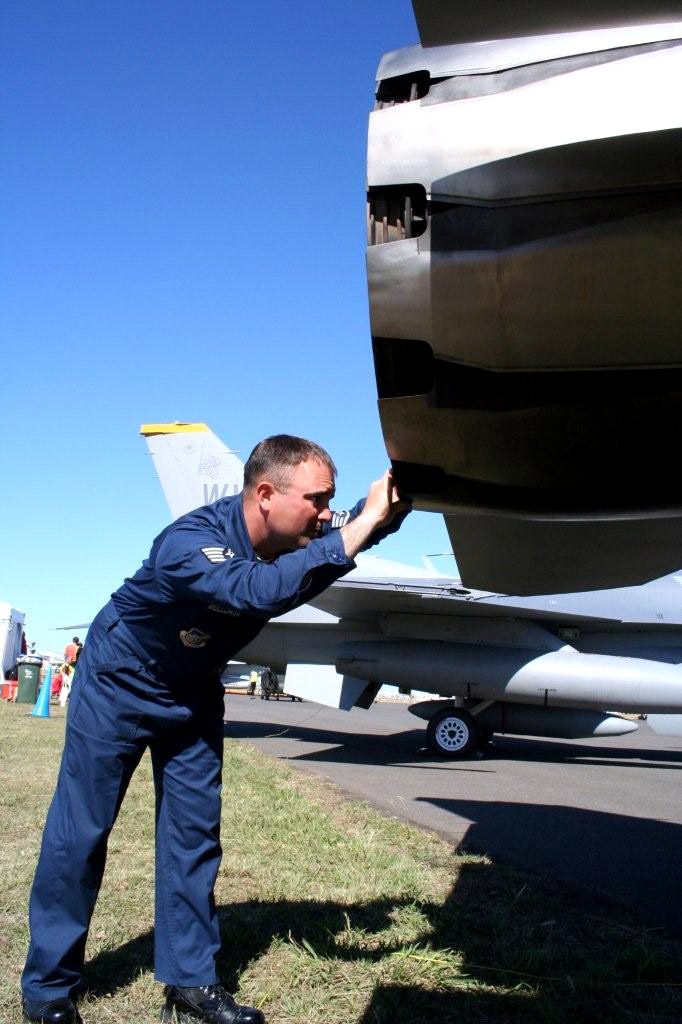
Maintaining in Australia

Staff Sgt. Justin Mollahan checks out the engine on an F-16 Fighting Falcon March 26 at Avalon Airport in Victoria, Australia. Pacific Air Forces Airmen and aircraft showcased American air power at the Australian International Airshow '07. Sergeant Mollahan is an engine specialist with the 35th Aircraft Maintenance Squadron from Misawa Air Base, Japan.